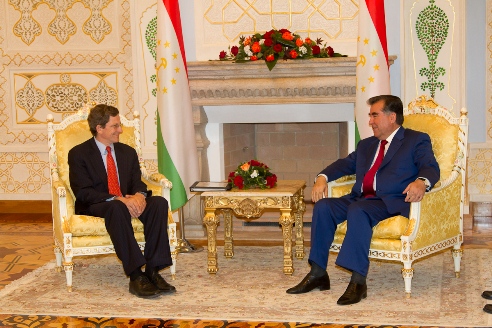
Ambassador Grossman Meets With Tajik President Rahmon

U.S. Special Representative to Afghanistan and Pakistan Marc Grossman meets with Tajik President Emomali Rahmon, in Dushanbe, Tajikistan, on May 20, 2011.